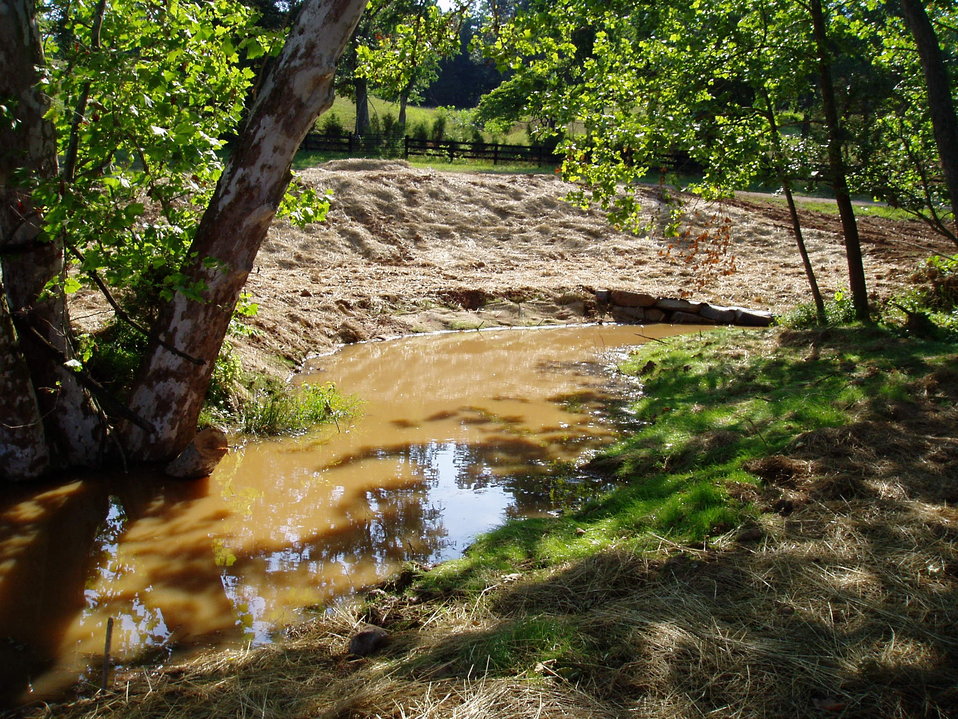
Beaver Run Station 1000 After Construction

This photo is of Station 1000 of the Beaver Run stream restoration project after construction. The bank on the left-hand side was re-graded and a J-hook strcuture was installed in-stream at the base of the newly graded streambank.